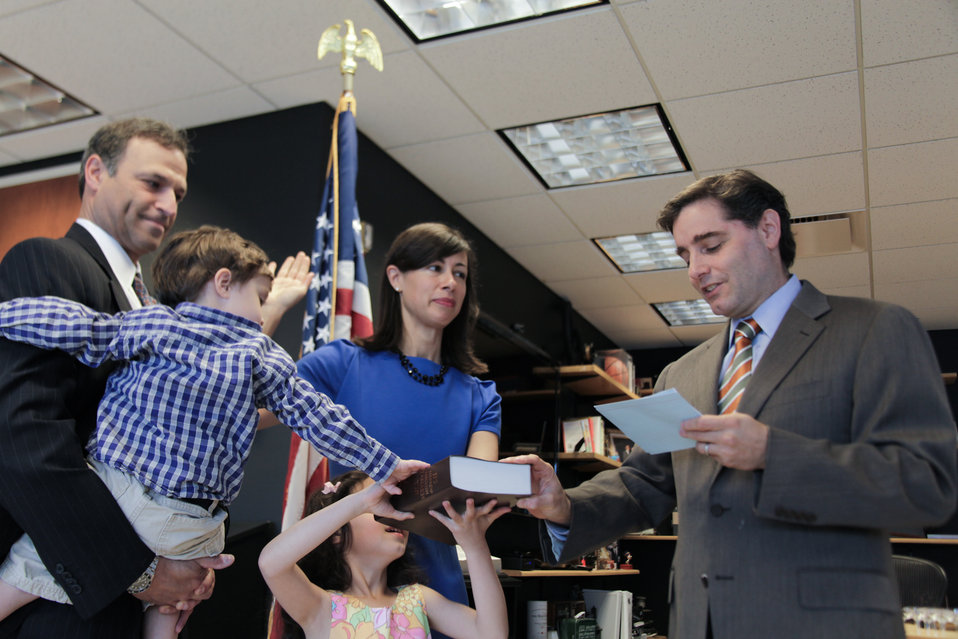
Commissioner Jessica Rosenworcel Being Sworn In by FCC Chairman Genachowski

FCC Chairman Genachowski swears in Jessica Rosenworcel with her family as a new Commissioner at the FCC headquarters in Washington, DC.

May 14, 2012.